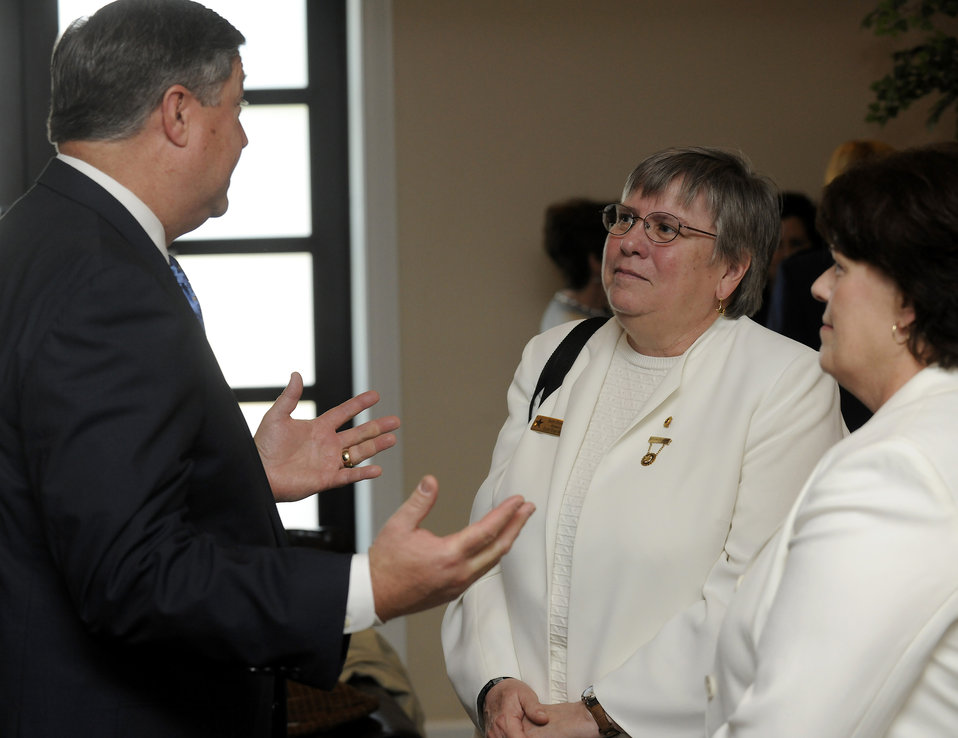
Fisher House Groundbreaking at Dover

Secretary of the Air Force Michael B. Donley speaks to members of the Gold Star Mothers of America, including their National President, Ruth Stonesipher, center, May 1 at Dover Air Force Base, Del. The Secretary, Gen. Norton A. Schwartz, Air Force Chief of Staff and other senior leaders were at Dover to co-host a groundbreaking ceremony for a new Fisher House there. This Fisher House is the first to be built and dedicated to provide hospice services to family members of fallen servicemembers.